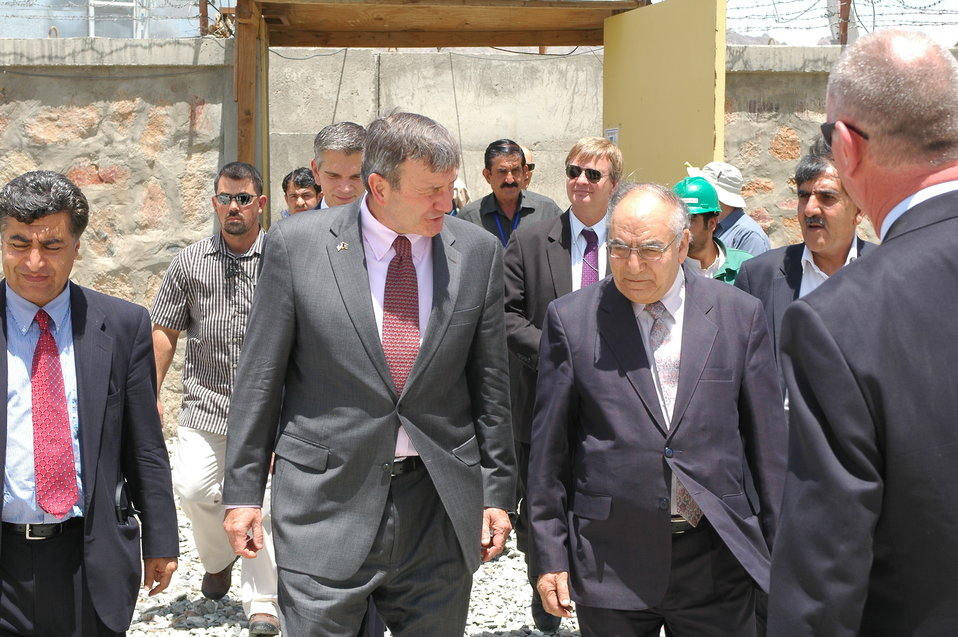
105 MW Tarakhil Power Plant Handover